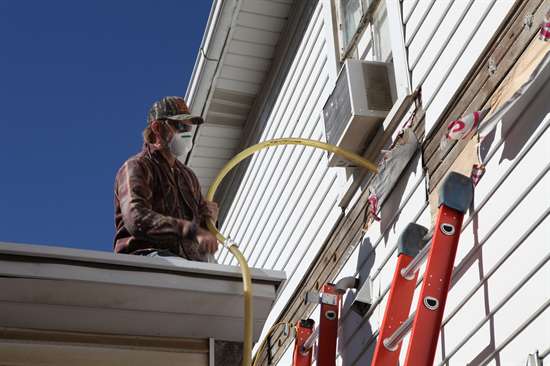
A weatherization worker blows sidewall insulation into the exterior walls of a home as part of the Energy Department's Weatherization Assistance Program.